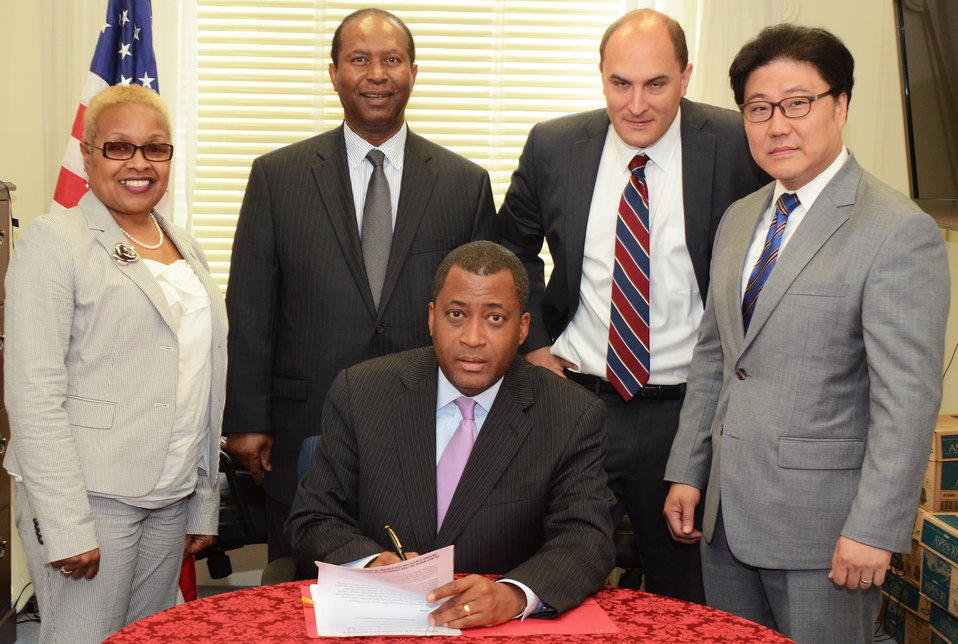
U.S. Department of Agriculture (USDA) Assistant Secretary for Civil Rights Dr. Joe Leonard (seated) signs a Memorandum of Understanding (MOU) for a Housing Testing Initiative between USDA and the U.S. Department of Justice at USDA in Washington, D.C. on Wednesday, Jun. 19, 2013.